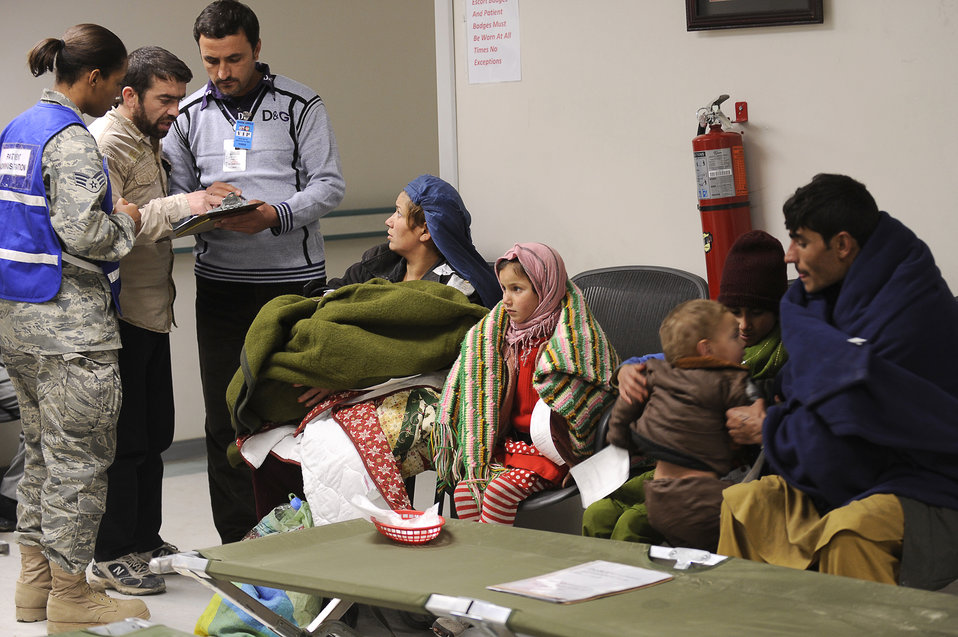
Afghan avalanches

Afghan doctors Shekib Hassanzada (left) and Abdul Hashim and Senior Airman Katrevious Swift discuss avalanche survivors? assessments at Craig Joint Theater Hospital at Bagram Airfield, Afghanistan. Dozens of Afghans were taken to Bagram Airfield after avalanches struck a mountain pass in the Parwan Province. Airman Swift is assigned to the 455th Expeditionary Medical Group.